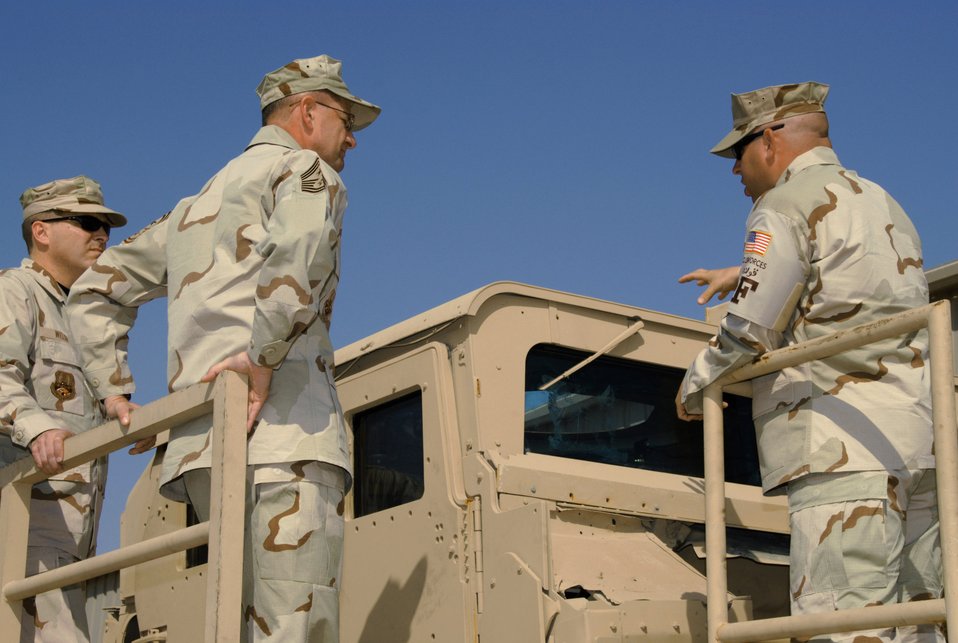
Airmen receive Humvee egress training to improve survival

Tech. Sgt. Thomas Williamson (right) explains the rollover Humvee simulator to several members of the 379th Air Expeditionary Wing. The simulator, located at an Army camp in Southwest Asia, is used for egress assistance training to help Airmen learn how to escape from an inverted Humvee and increase their chance of survival after a catastrophic event.